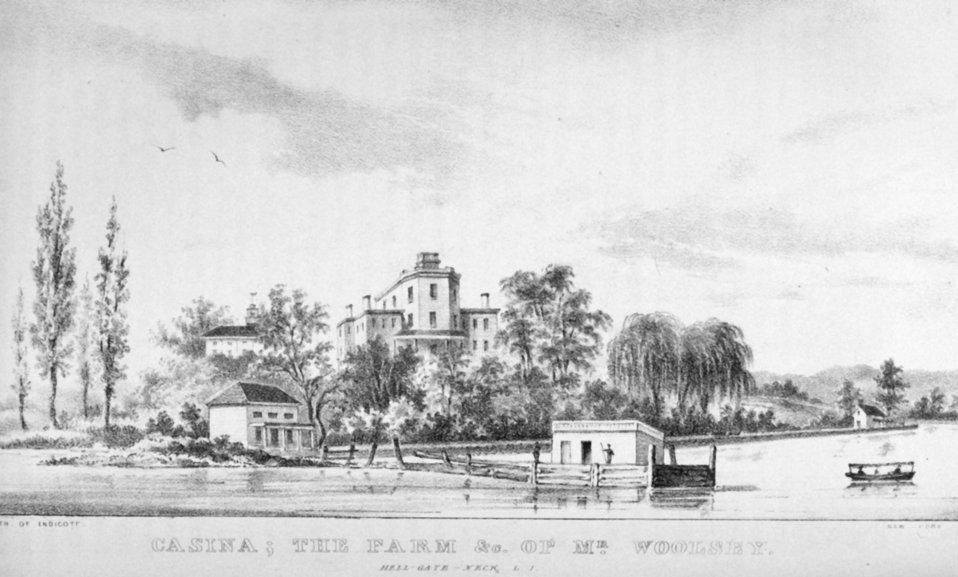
Casina; The Farm and &c. of Mr. Woolsey at Hell-Gate-Neck, Long Island.